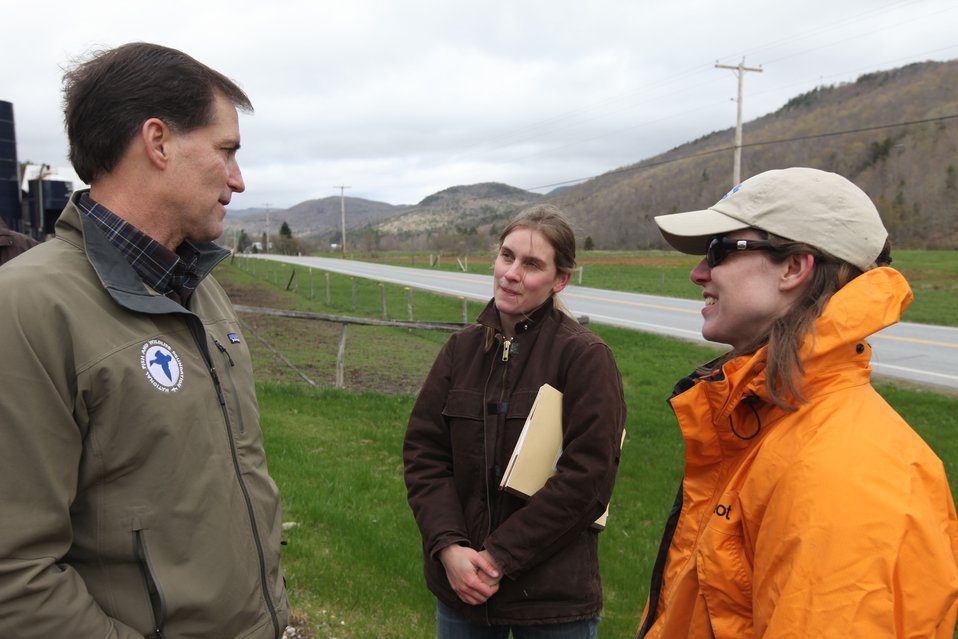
Dan Ashe speaks with White River Partnership staff at riparian restoration site

U.S. Fish & Wildlife Service Director Dan Ashe visits the Northeast Region
for a tour of the White River National Fish Hatchery in Bethel, Vermont on
April 27, 2012. The hatchery was devastated by Tropical Storm Irene and
Dan Ashe had the chance to meet and thank the staff for their heroic work.
Director Ashe also visited restoration/flood response/fish passage project
sites in Rochester, Vermont and met with local officials and staff from the
White River Partnership.